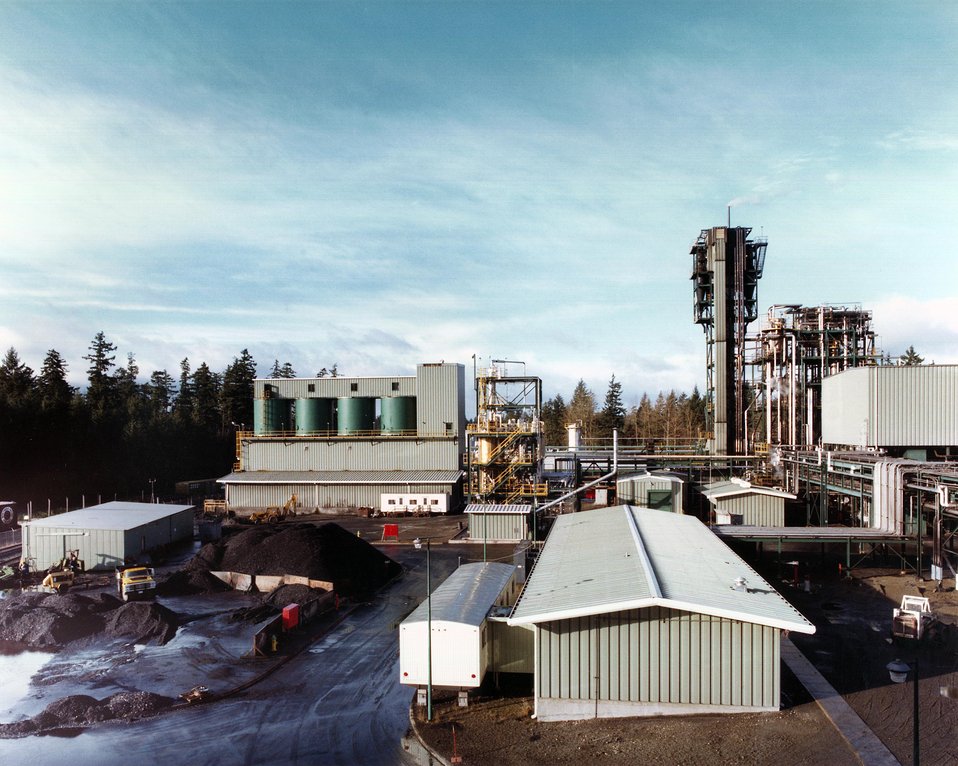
CONTROL BUILDING CENTER COAL PILES. THE SOLID SOLVENT REFINED COAL STORAGE BINS ARE AT LEFT, BEHIND COAL PILES.